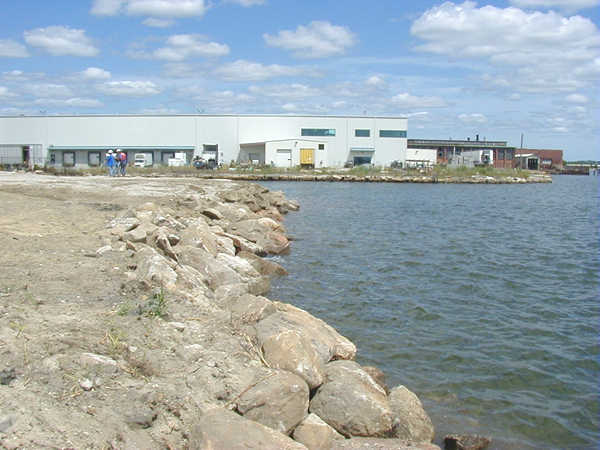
July 2002, With the abandoned boats removed, the shoreline is ready for the construction of the relocated terminal